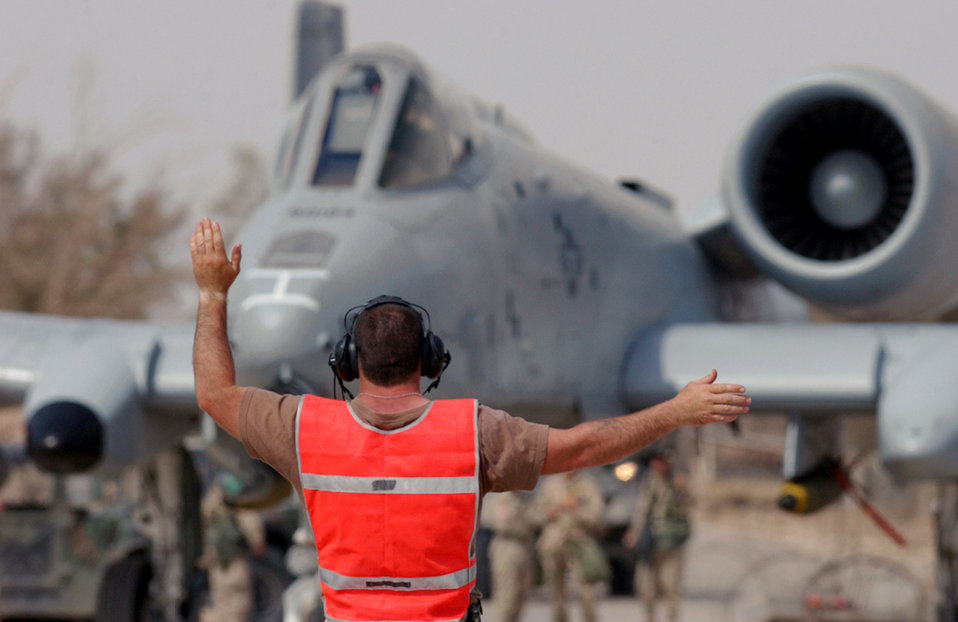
Point it that way

OPERATION IRAQI FREEDOM -- Tech. Sgt. Tim Glenn directs an A-10 Thunderbolt II on April 18. He is a crew chief assigned to the 442nd Fighter Wing at Tallil Air Base in southern Iraq. Officials here say this is the first A-10 hot refuel in Iraq and the first time the R-14 fuel hydrant system was used in the process. The 442nd is from Whiteman Air Force Base, Mo.